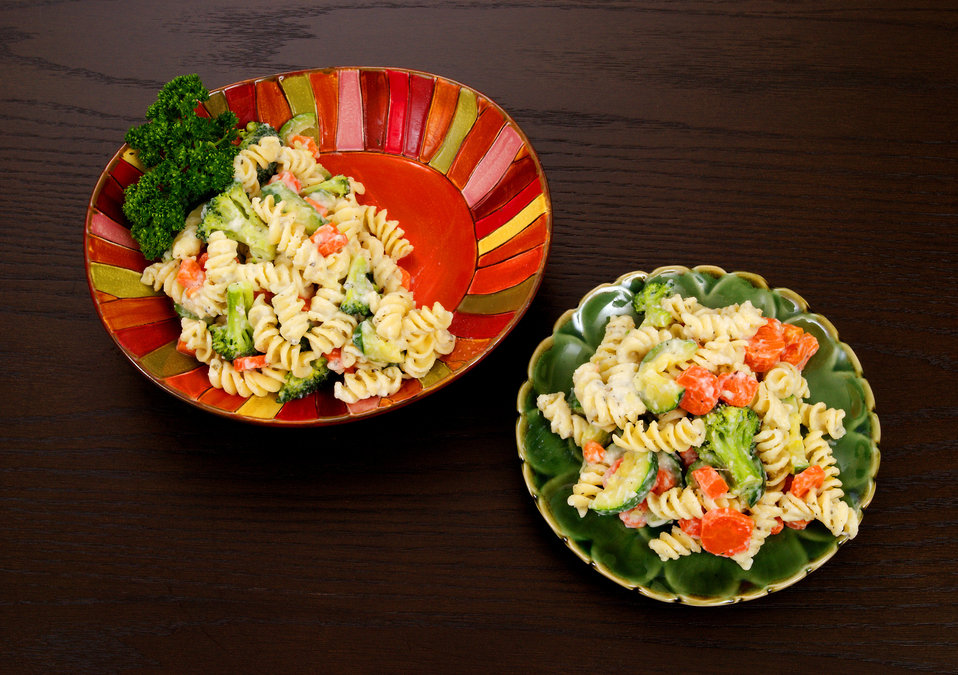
This image depicts a plate of Pasta Primavera, from which a single serving had been removed, and plated on its own small serving dish.